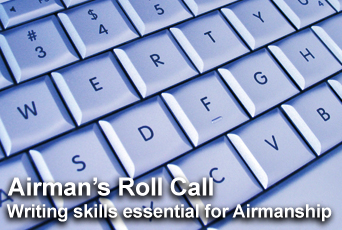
Airman's Roll Call highlights writing skills

This week's Airman's Roll Call highlights writing well as essential to good Airmanship.